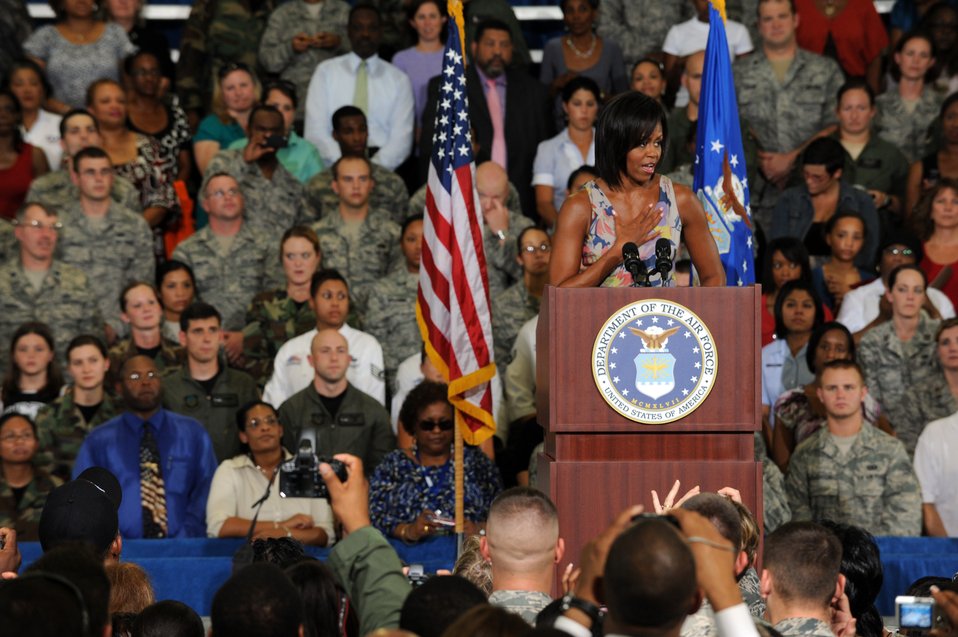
First lady speaks on taking care of military families

First Lady Michelle Obama speaks to the crowd at Eglin Air Force Base, Fla., Oct. 15 during a visit to the base. Ms. Obama spoke about family values and praised military members and their families during the speech.